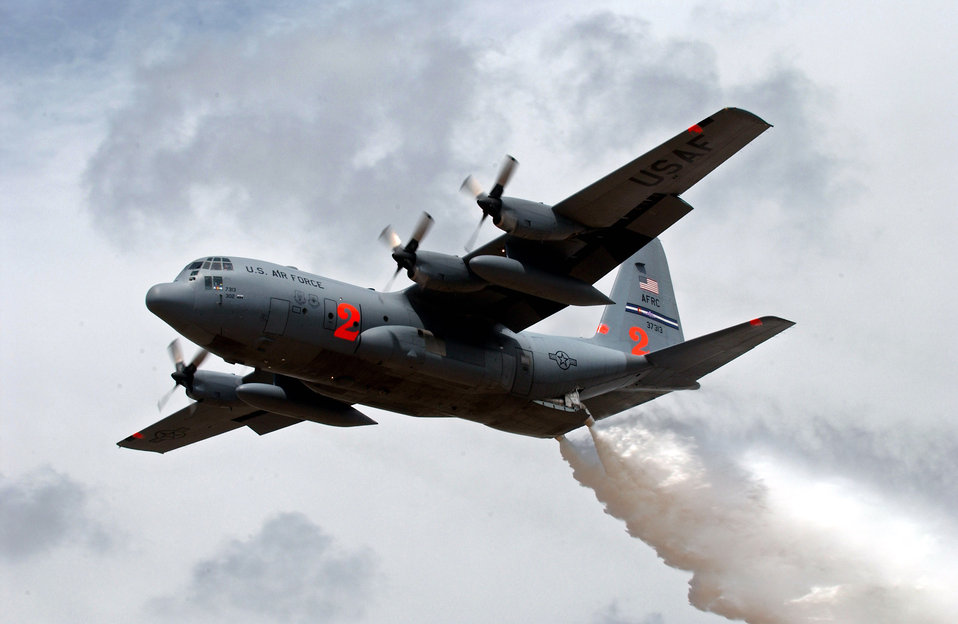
Reserve C-130s helping fight California fires

Two Air Force Reserve Command C-130 Hercules aircraft, equipped with Modular Airborne Firefighting Systems like this C-130 dropping water during annual MAFFS training in New Mexico, have been dispatched to help battle wildfires in California. The aircraft are from the 302nd Airlift Wing at Peterson Air Force Base, Colo.